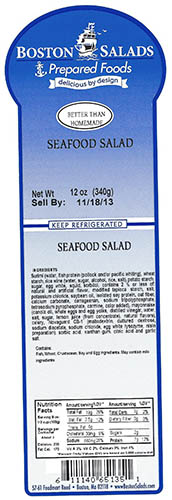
RECALLED – Prepared salads

October 24, 2013 – Product Recall – Boston Salads and Prepared Foods Recalling Ready-To-Eat Products Because of Possible Health Risk.